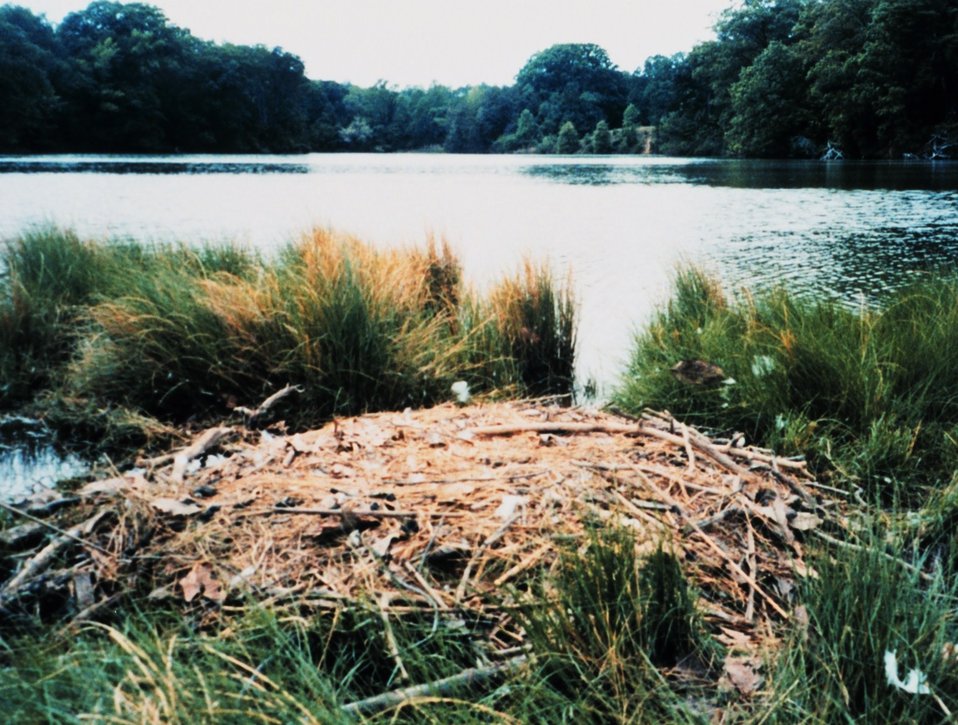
Mute swan nest. Mute swans are an agressive invasive species along the East Coast. There are now over 3,000 mute swans in the Maryland portion of the Chesapeake Bay.